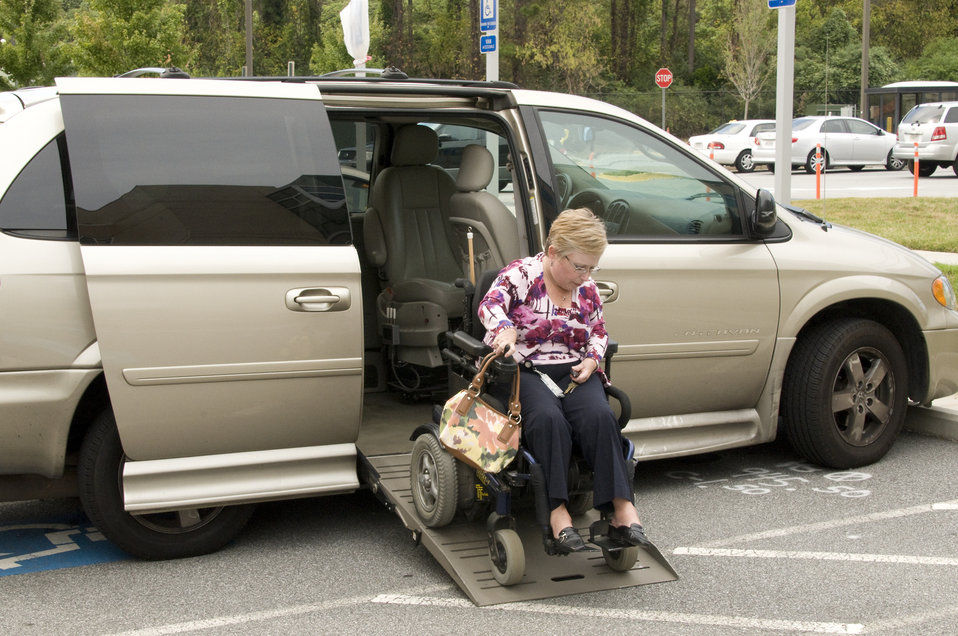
The woman pictured here was seated in her wheelchair, and was proceeding to board her vehicle, which had been outfitted with a ramp, rotatable driver's seat, and other accessories, which made this a very accessible, disability-friendly minivan. At this point of the boarding process, she was still in her wheelchair, backing up the access ramp, while once inside, she would then transfer to the driver's seat.